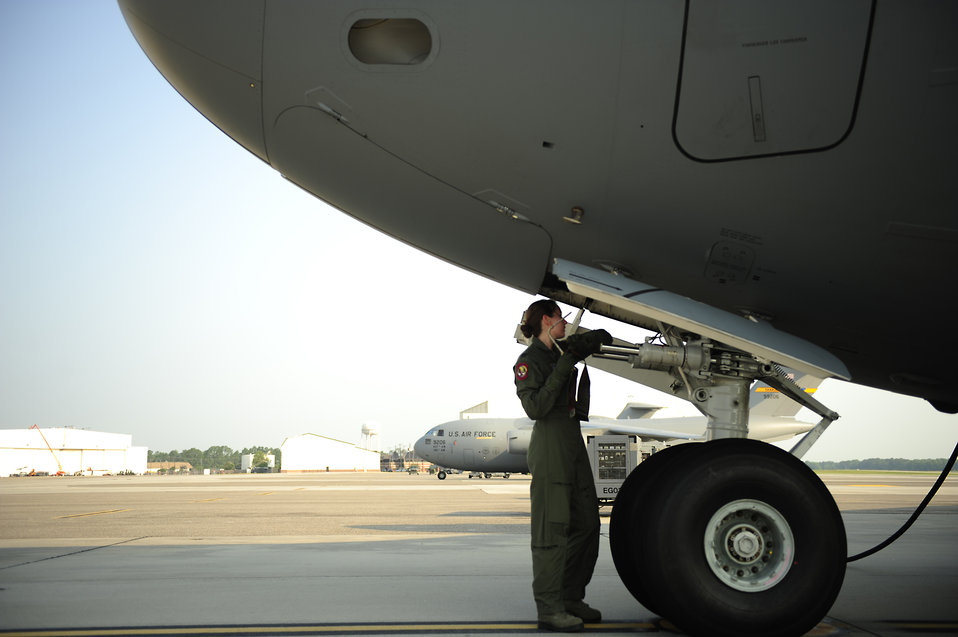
Getting ready to fly

Capt. Alicia Carey conducts a preflight check on a C-17 Globemaster III May 25, 2011, at Joint Base Charleston, S.C., in preparation for a training mission. Captain Carey is a pilot assigned to the 15th Airlift Squadron.